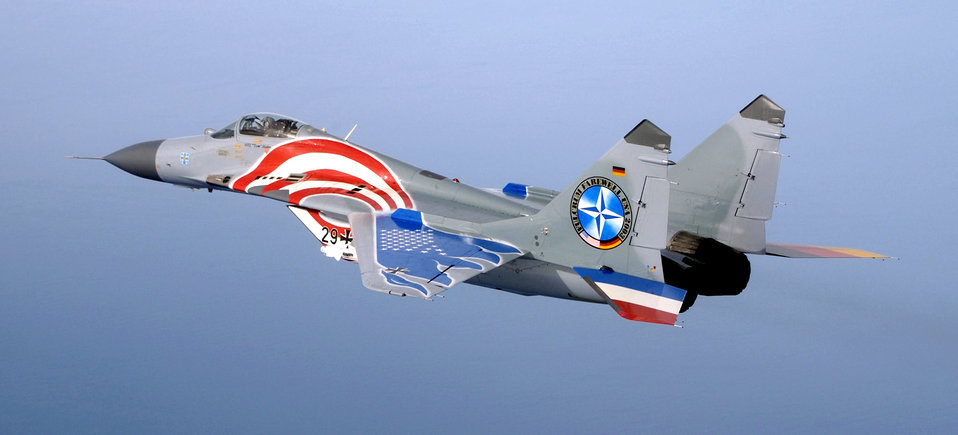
MIG farewell tour

EGLIN AIR FORCE BASE, Fla. -- This MiG-29 Fulcrum flown by Lt. Col. Tom Hahn, squadron commander of Germany's Fighter Wing 73